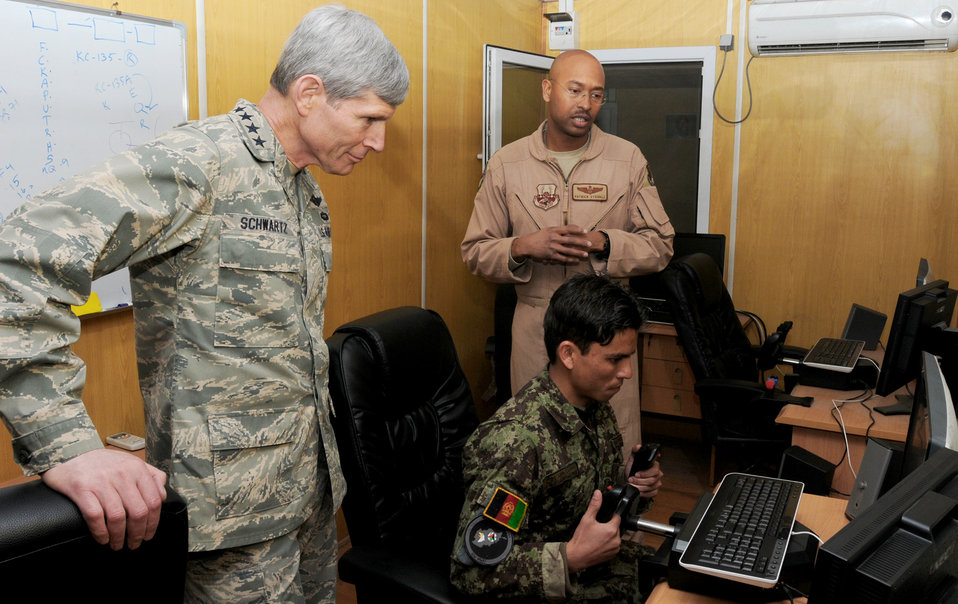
Air Force chief of staff visits Thunder Lab

Air Force Chief of Staff Gen. Norton Schwartz observes Afghan air force Lt. Jamshid Baryalai demonstrate a simulated flight during his visit to the English immersion lab known as